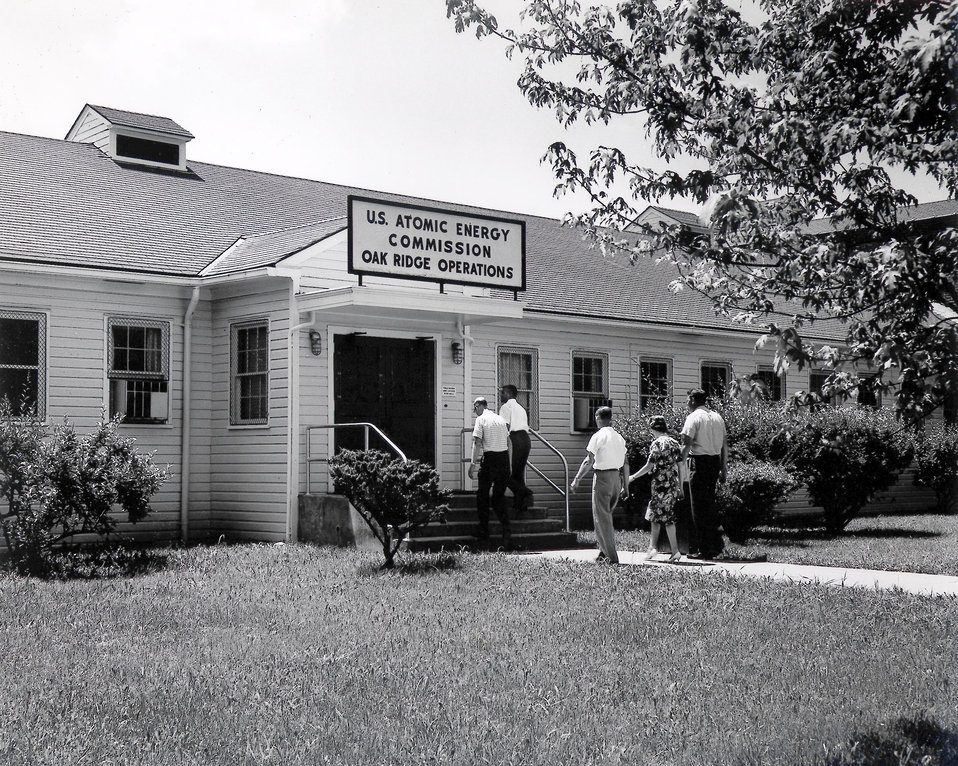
AEC Admin. Bldg. Oak Ridge

62-585 DOE photo by Ed Westcott 1962 Oak Ridge Tennessee